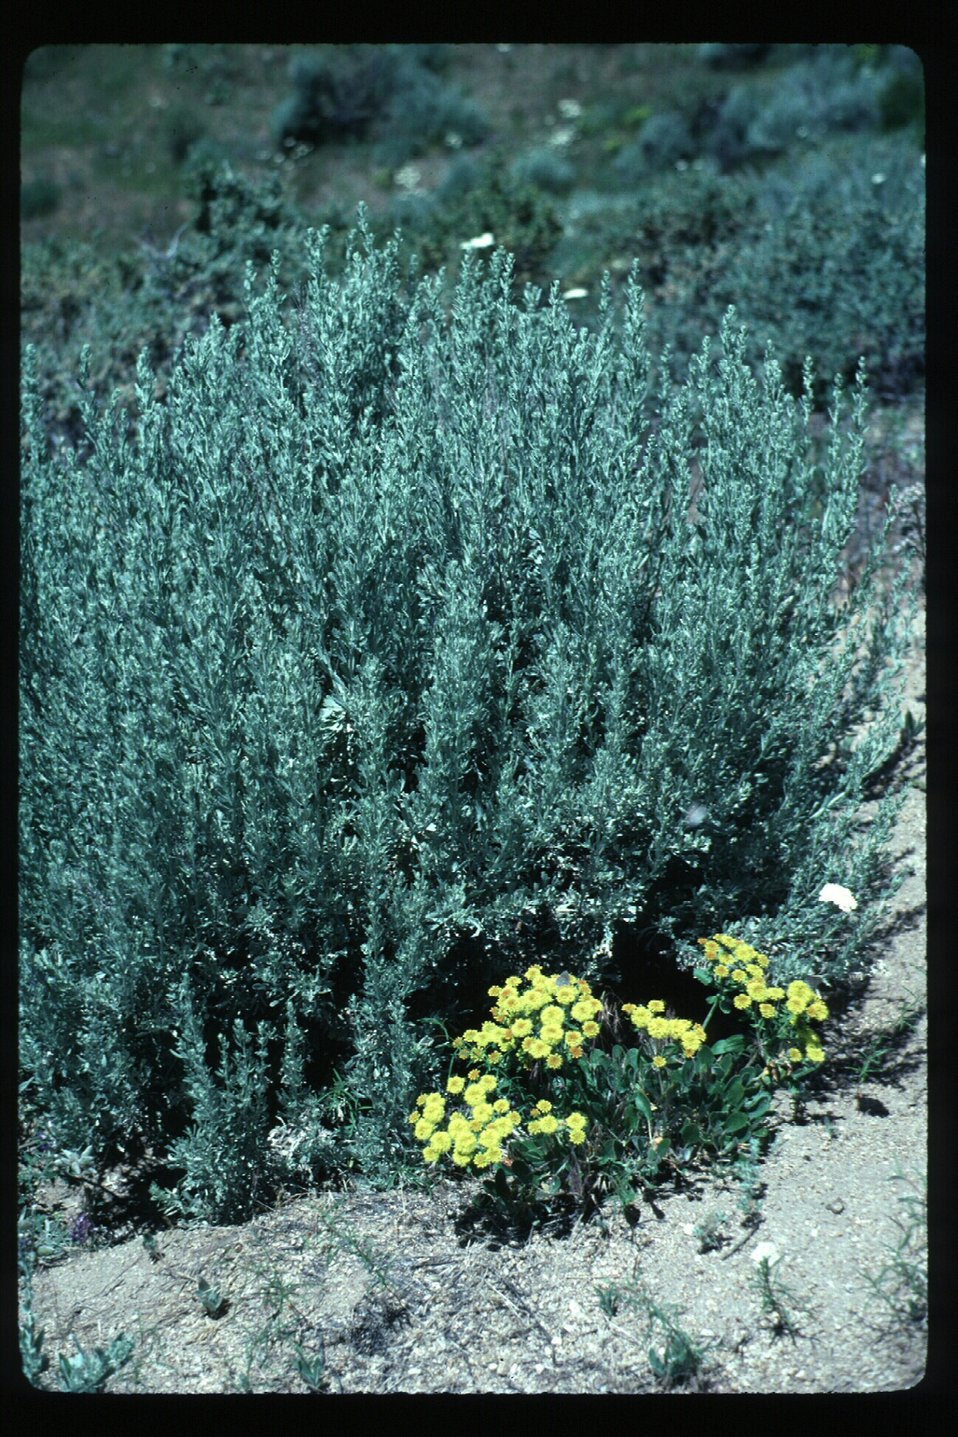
Wildflowers in Boise Foothills Boise Front Four Rivers Field Office LSRD Lower Snake River District